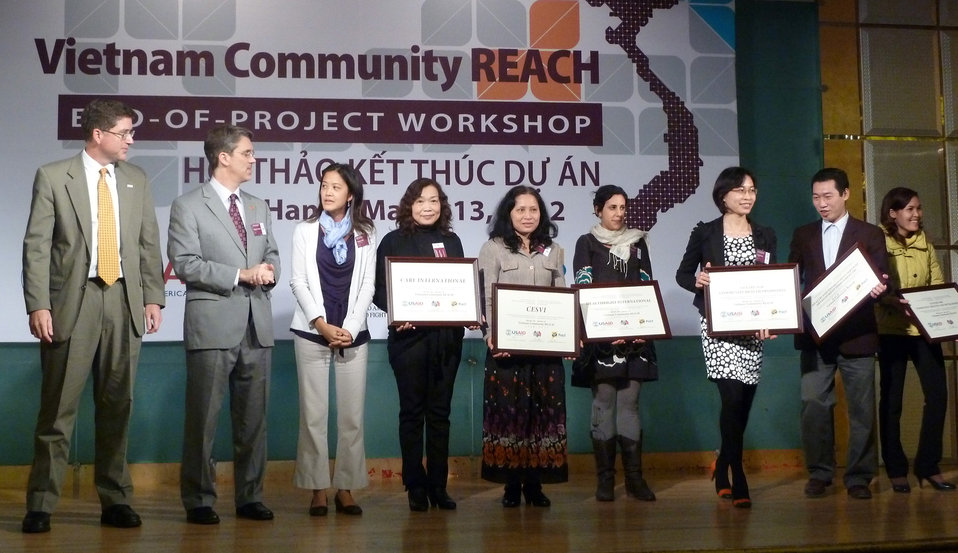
USAID, PEPFAR, and Pact award certificates to local and international partners for their work in addressing HIV in Vietnam

Community REACH project close-out with USAID and implementing partner, Pact